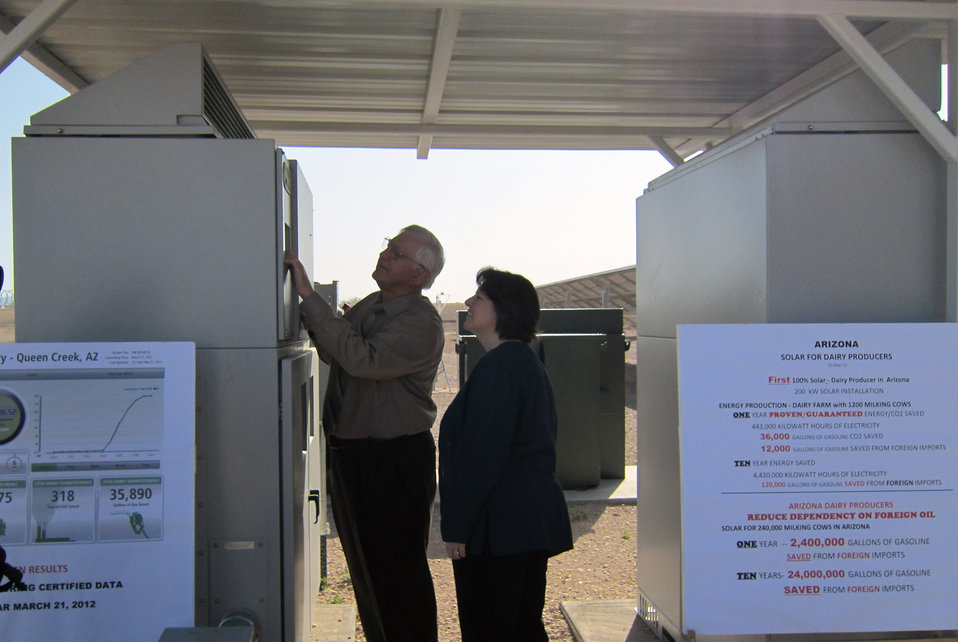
Agriculture Deputy Secretary Dr. Kathleen Merrigan with Victor Orlowski
President of Professional Engineers for the Dairy Industry as he demonstrates new equipment on the Zimmerman Dairy in Queen Creek, Arizona, on Tuesday, March 27, 2012.